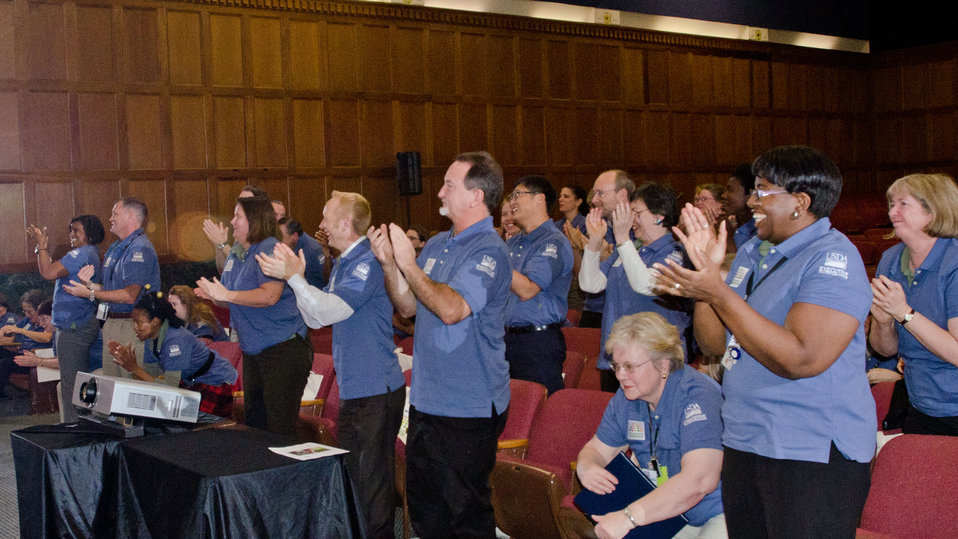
Graduation day of the 2011 U.S. Department of Agriculture (USDA) Executive Master Gardeners, on Tuesday, November 8, 2011 in Washington, DC. During the past six-weeks, students contributed 40-hours of volunteer time, completed studies and testing to receive their certificates today as an Executive Master Gardener. Many of the sessions occurred before work hours, during lunchtime or at community garden project sites such as Powell Middle School. USDA challenges its employees to establish People's Gardens at USDA facilities worldwide or in community gardens. People's Gardens vary in size and type, but all have a common purpose - to help the community and the environment. To learn about the People’s Garden Initiative visit www.usda.gov/wps/portal/usda/usdahome?contentid=peoples g....